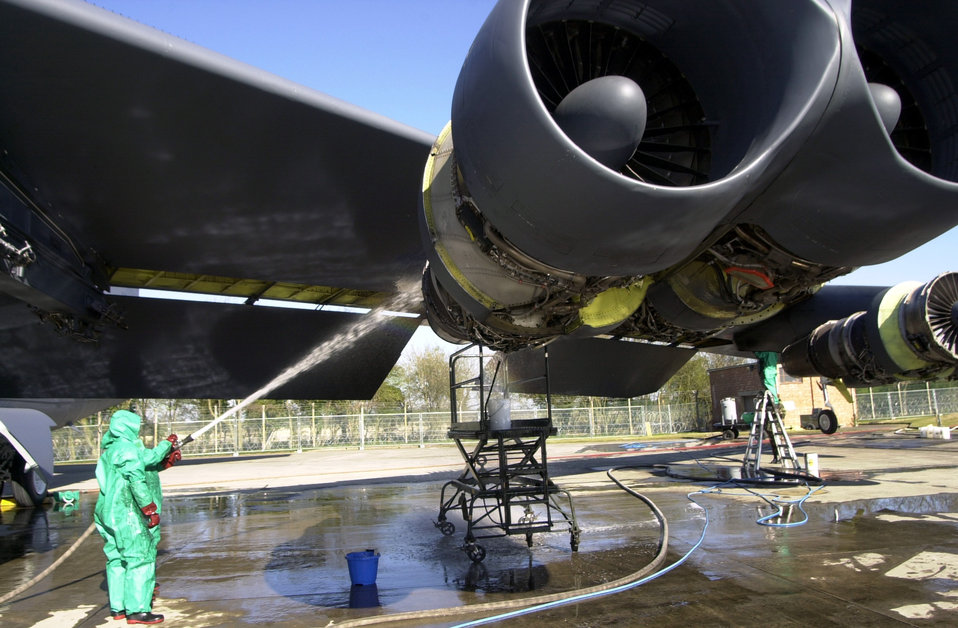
B-52 washing

OPERATION IRAQI FREEDOM -- deployed to a forward location perform a